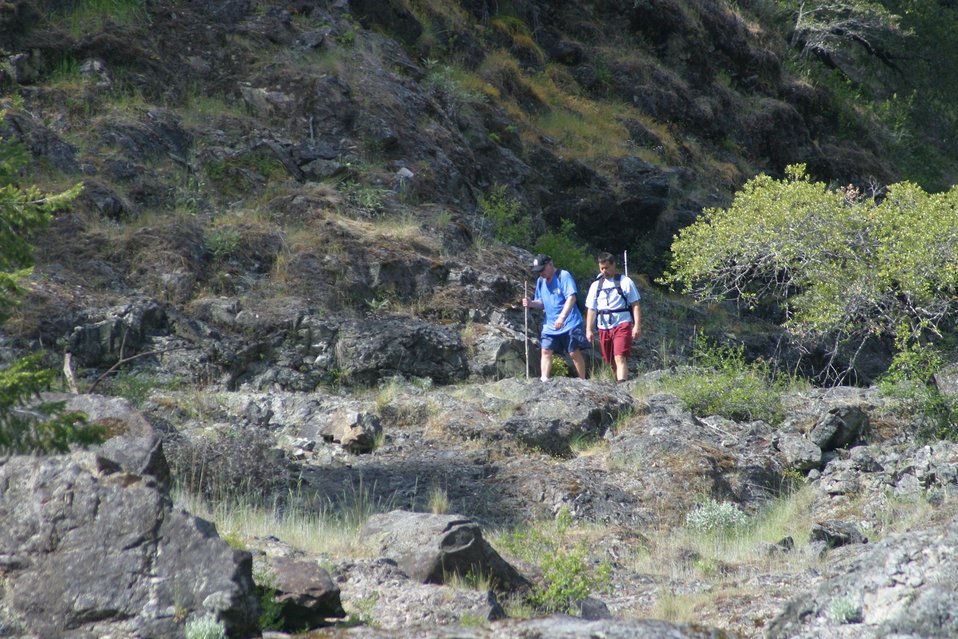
Wild section of the Rogue River from Grave Creek to Foster Bar May 19 to May 22.